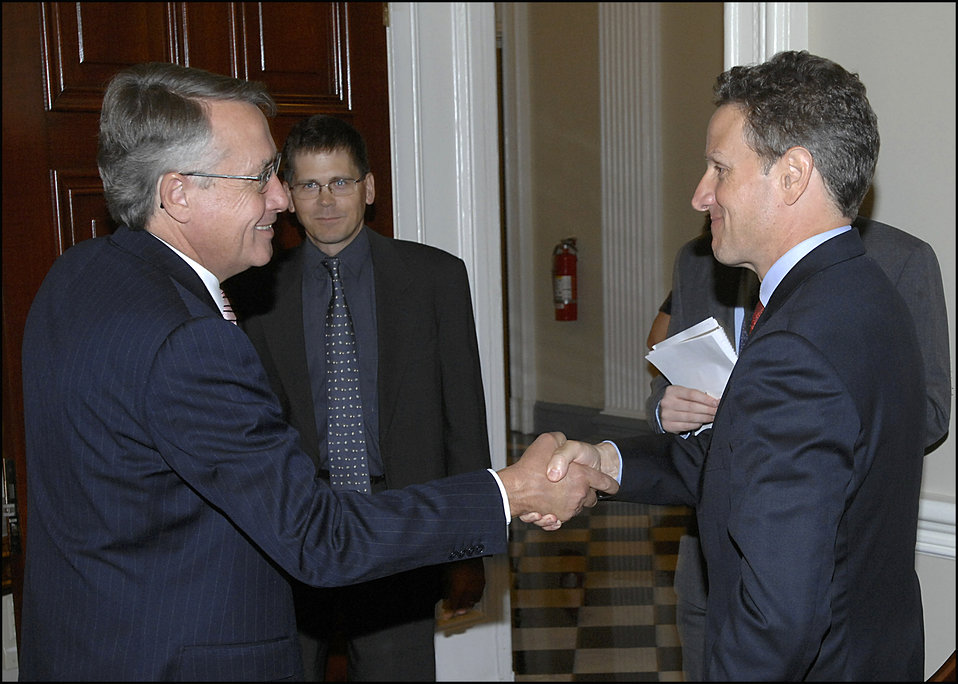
Australian Treasurer Wayne Swan

On September 23, 2009, Secretary Geithner met with the Australian Treasurer Wayne Swan.